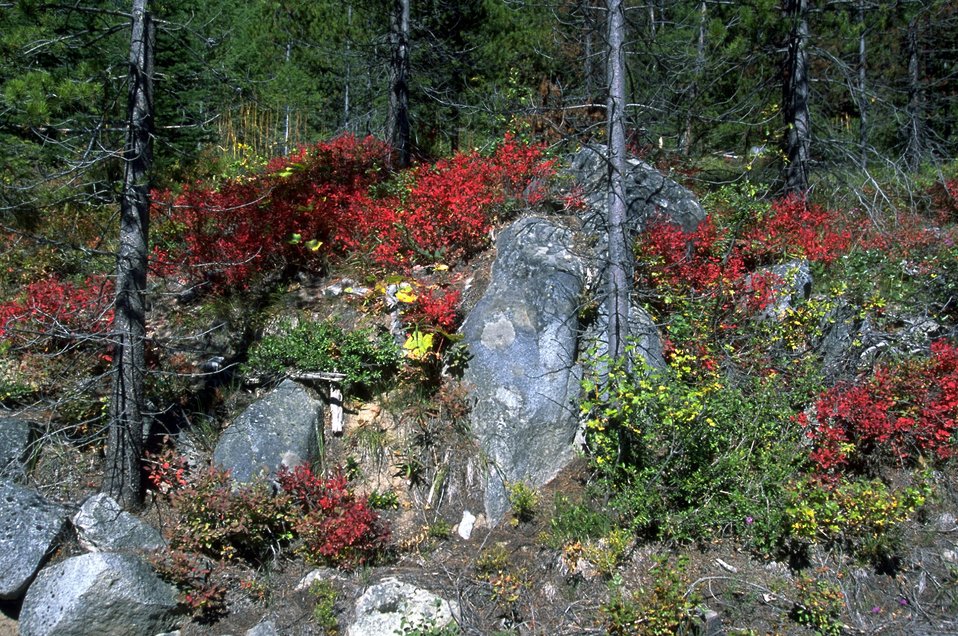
Garnet Back Country Byway with fall colors